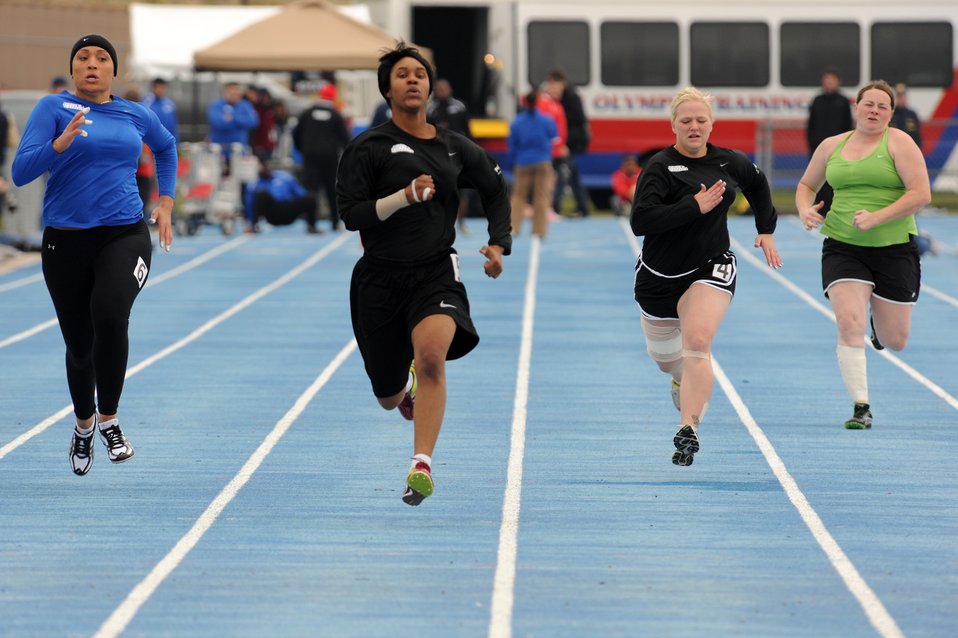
Warrior Games AF track and field

Athletes compete in the track and field events during the Warrior Games at the Air Force Academy track in Colorado Springs, Colo., May 14, 2010.